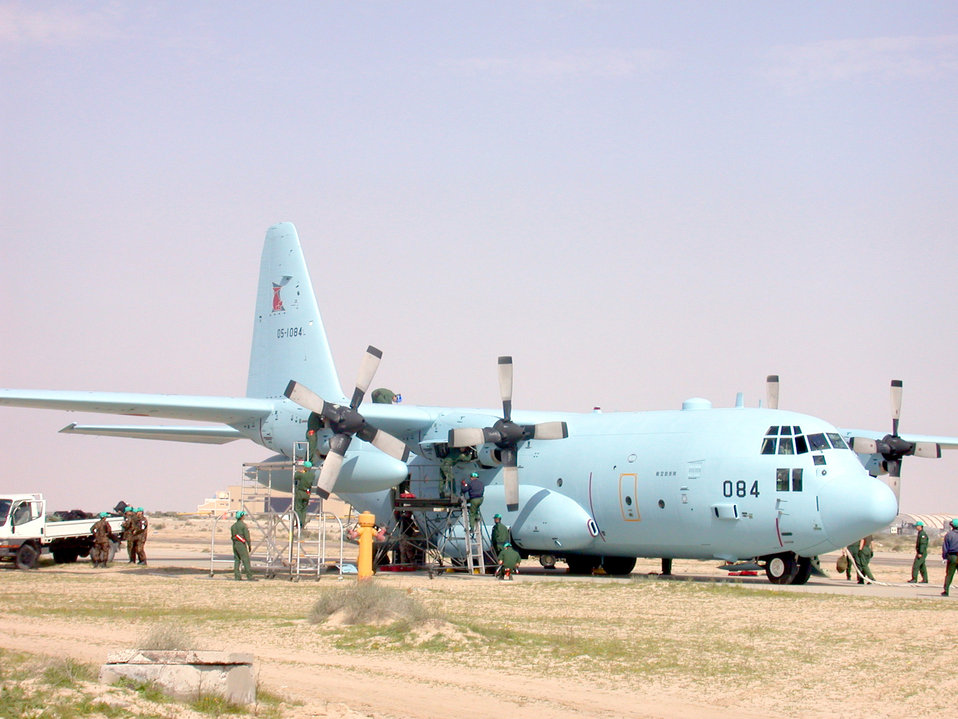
Japanese forces arrive

The first of three Japanese C-130Hs receives maintenance after landing at a forward-deployed location Jan. 30. The JASDF will support humanitarian missions as part of the coalition forces.